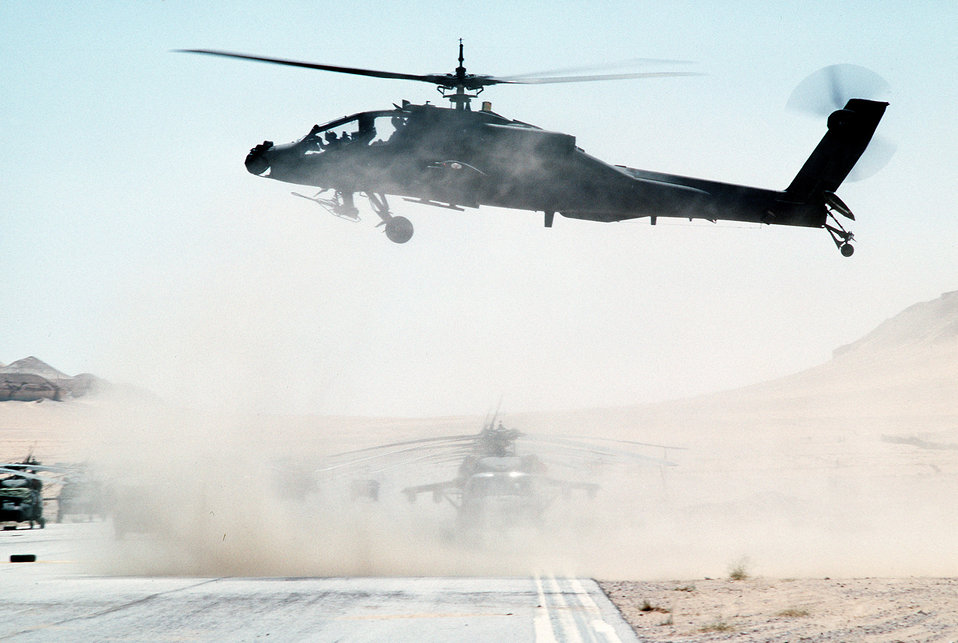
UH-60A Black Hawk helicopters

1990's -- A UH-60A Black Hawk helicopters prepare to takeoff as the 82nd Aviation Brigade relocates in the desert during Operation Desert Shield.